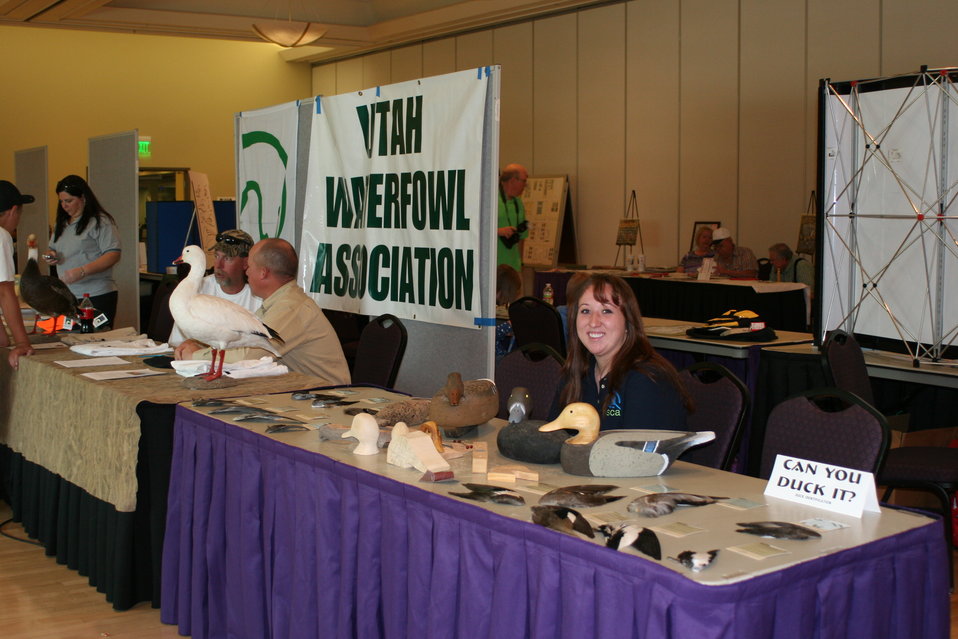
Outreach

Photo Credit: Suzanne Fellows / USFWS
The U.S. Fish & Wildlife Service sponsored the 2012 Federal Duck Stamp Art Contest September 28 and 29 in Ogden, Utah, at Weber State University. A panel of five judges was responsible for choosing the art work used to design the 2013-2014 Migratory Bird Hunting and Conservation Stamp.